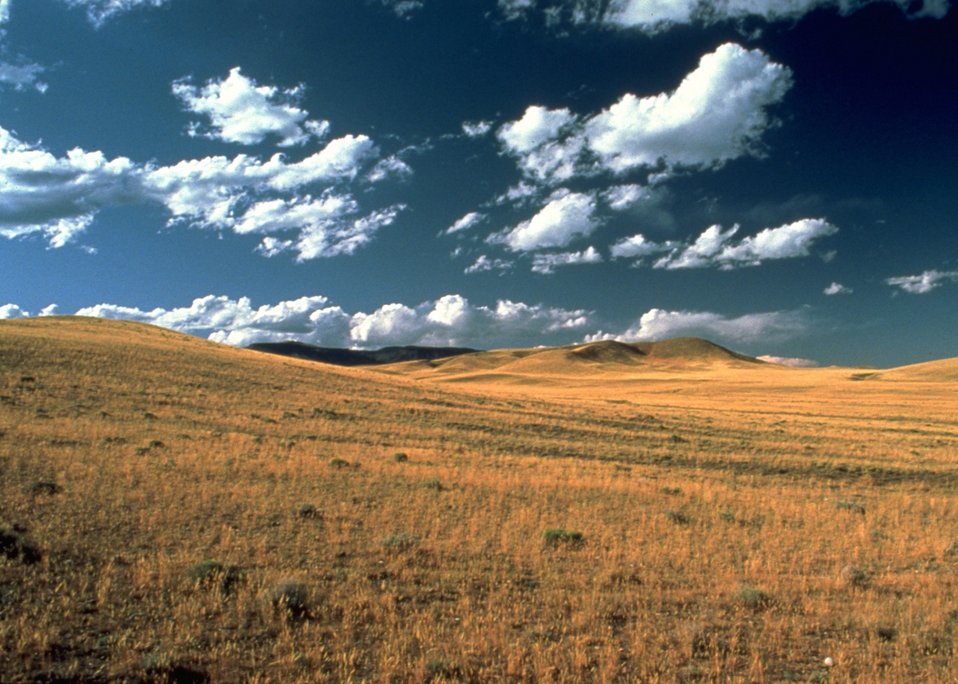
Scenic view of grassland.